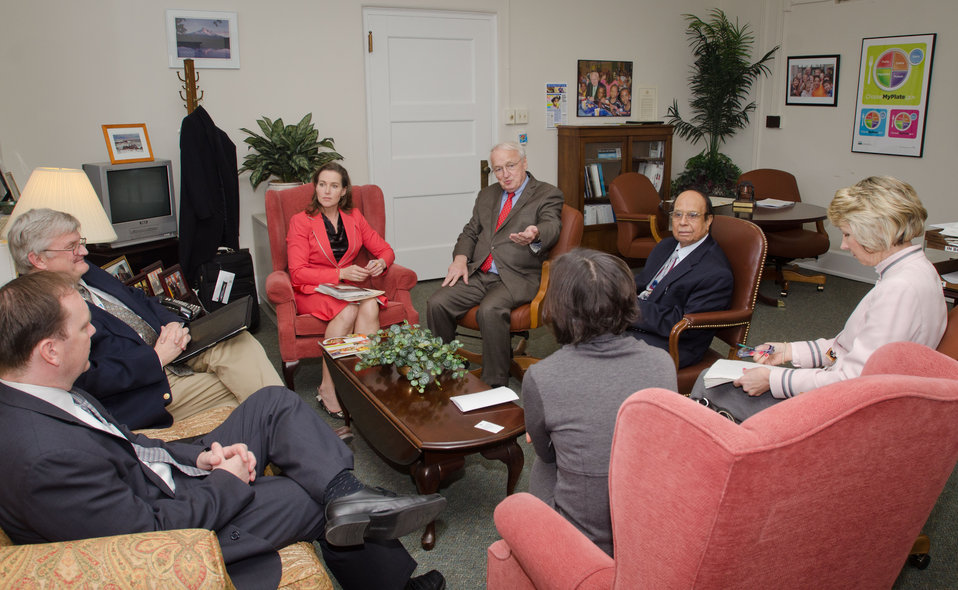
First Lady of Oregon Cylvia Hayes (second from right) met with Agriculture Under Secretary for Food, Nutrition and Consumer Services (FNCS) Kevin Concannon (third from right) in his offices at the Agriculture headquarters in Washington, D.C., on Monday, February 27, 2012. They discussed school lunch options and nutrition assistance programs within the Food and Nutrition Service (FNS) who's motto is 'Ending Hunger, Improving Nutrition.'